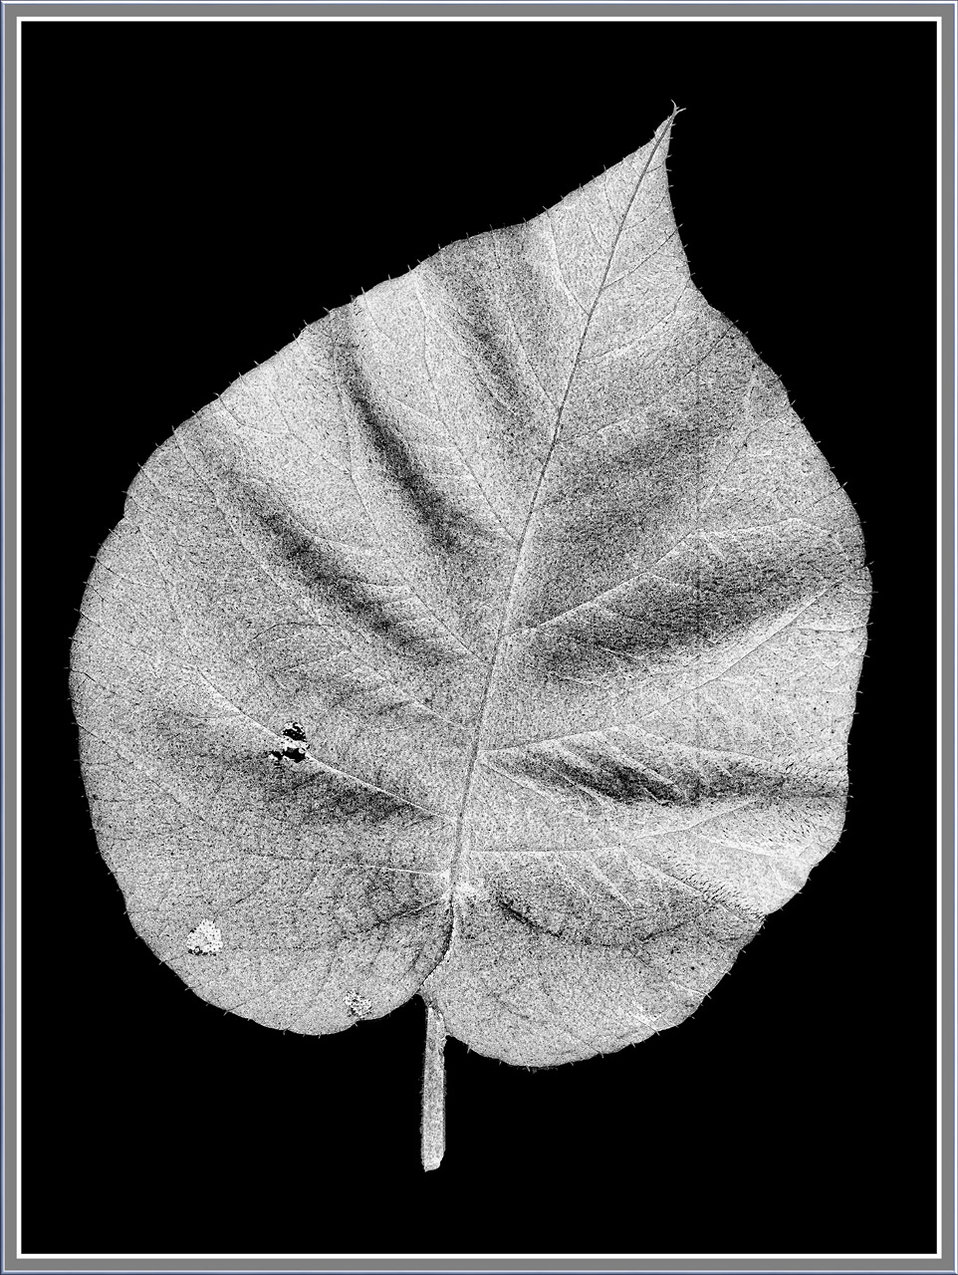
Black / white

Pseudo-photogram.